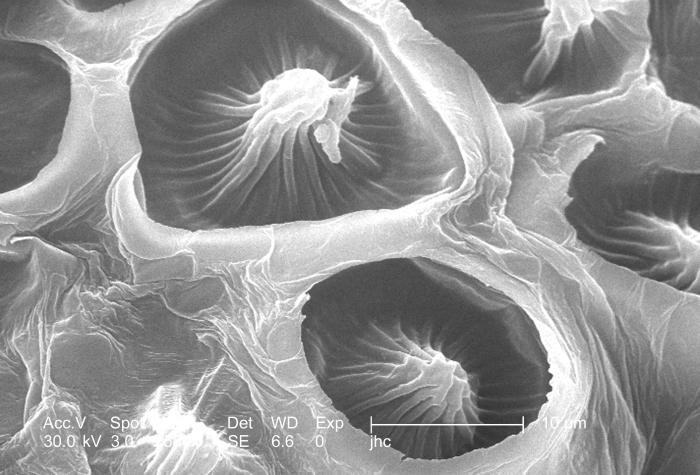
Under a high magnification of 2584x, this scanning electron micrograph (SEM) revealed some of the ultrastructural details seen on the surface of a "crimson clover", Trifolium incarnatum flower petal. This clover was blooming during the month of March on the grounds of the Centers for Disease Control headquarters in Atlanta, Georgia. Being that flower petals are actually modified leaves, the highly textured surface, composed of many cavitations and protuberances, are actually modification of the plant's leaf morphology, such as the leaf's stomata, which are the leaf pores through which the plant respires.